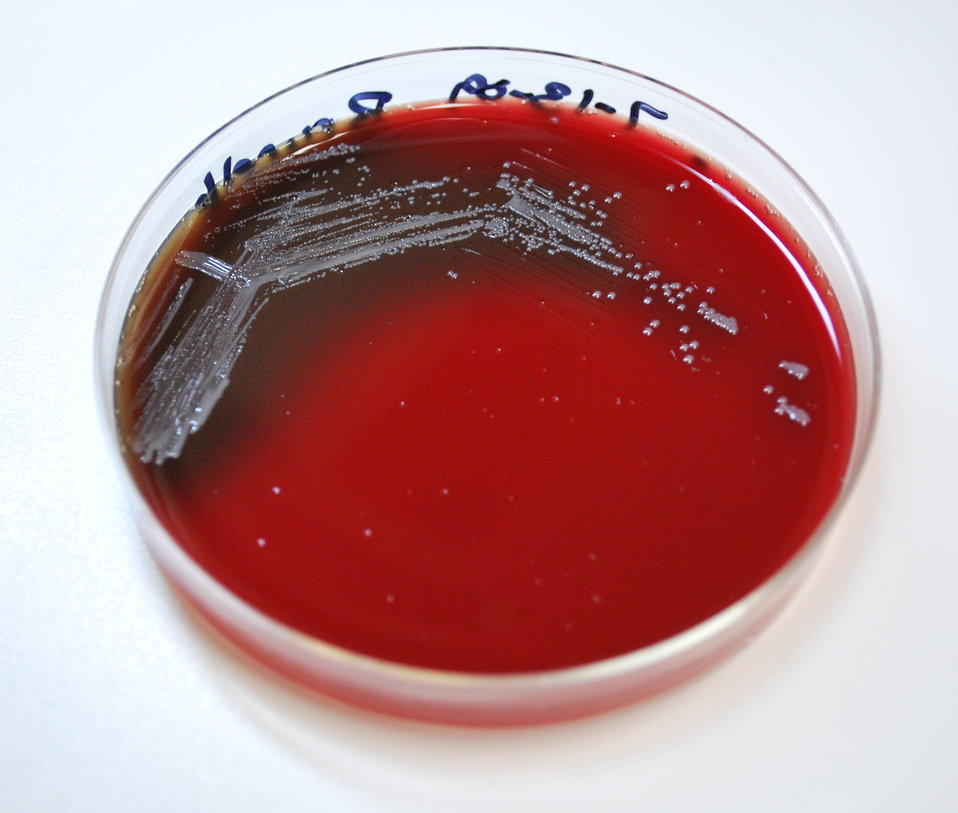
This image depicts the colonial morphology exhibited by colonies of Brucella abortus bacterial, which had been cultivated on sheep's blood agar (SBA), for a period of 72 hours.Infectious Agent